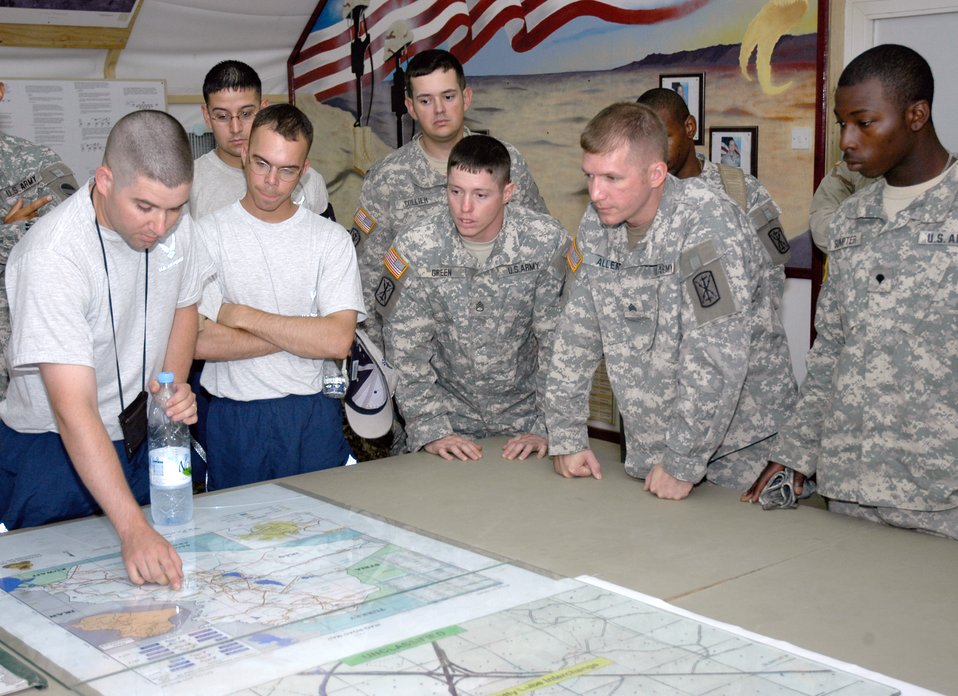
Convoy Airmen face challenging duties

Airmen of the 586th Expeditionary Mission Support Group's 424th Medium Truck Detachment plan a mission with Soldiers from gun truck security command Charlie 1/12. The 424th MTD is responsible for convoy operations in Southwest Asia.